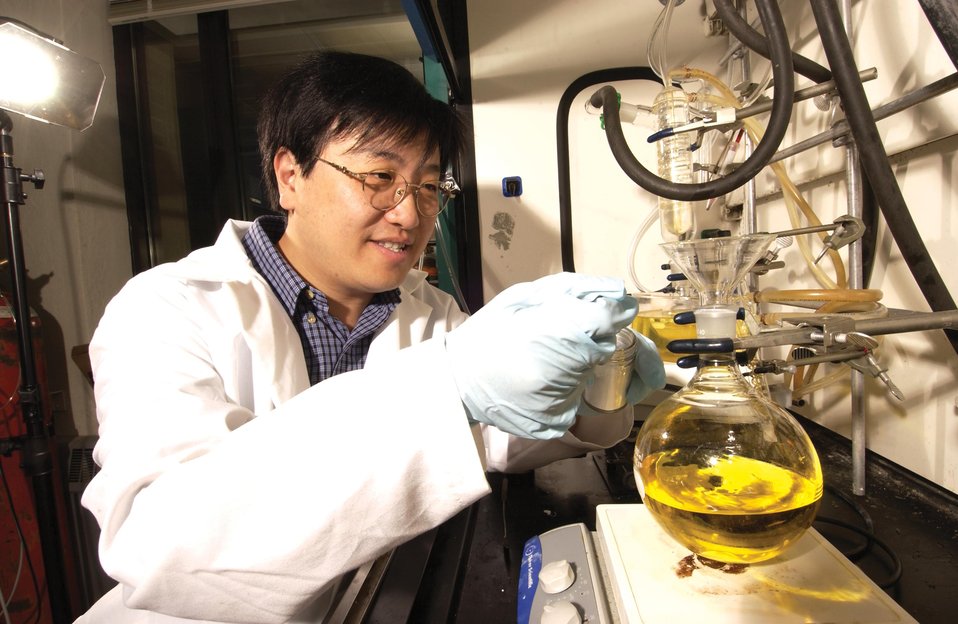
AMES SCIENTIST ADDS HETEROGENEOUS CATALYST TO SOYBEAN OIL TO CREATE BIODIESEL.

SOY DIESEL OR BIODIESEL, MADE FROM SOYBEANS, IS GAINING FAVOR AS AN ALTERNATIVE FUEL BECAUSE IT IS CLEAN BURNING AND BIODEGRADABLE. CATALYSTS ARE KEY TO CONVERTING TRIGLYCERIDES LIKE SOYBEAN OIL TO BIODIESEL. CATALYSIS AND THE DEVELOPMENT OF TEST HETEROGENEOUS CATALYSTS ARE MAJOR STUDIES AT AMES LAB'S BIORENEWABLE RESOURCES CONSORTIUM. IN AN EFFORT TO MAKE BIODIESEL A COMPETITIVE ATLERNATIVE FUEL, AMES IS COLLABORATING WITH WEST CENTRAL, A FARMER-OWNED COOPERATIVE IN IOWA THAT ANNUALLY PROCESSES 72 MILLION POUNDS OF SOY OIL INTO BIODIESEL.